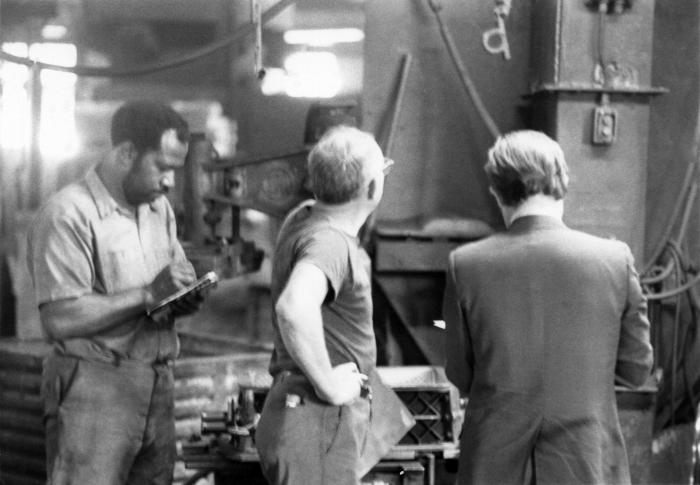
Thought to be from the 1970s, this historic image provided by the Center for Disease Control's (CDC), National Institute for Occupational Safety and Health (NIOSH), depicted three men in an industrial setting while they were discussing points of interest germaine to the factory workers' safety. Two of the men were making notations on hand-held pads. One man was dressed in a business suite, while the other two were dressed in industrustrial work attire. Though the type of factory interior cannot be determined, note that none of the men were wearing any protective garments, such a goggles, hardhats, or filtered breathing devices. The man at the far right, dressed in business attire, may have been an industrial hygienist who was compiling data.